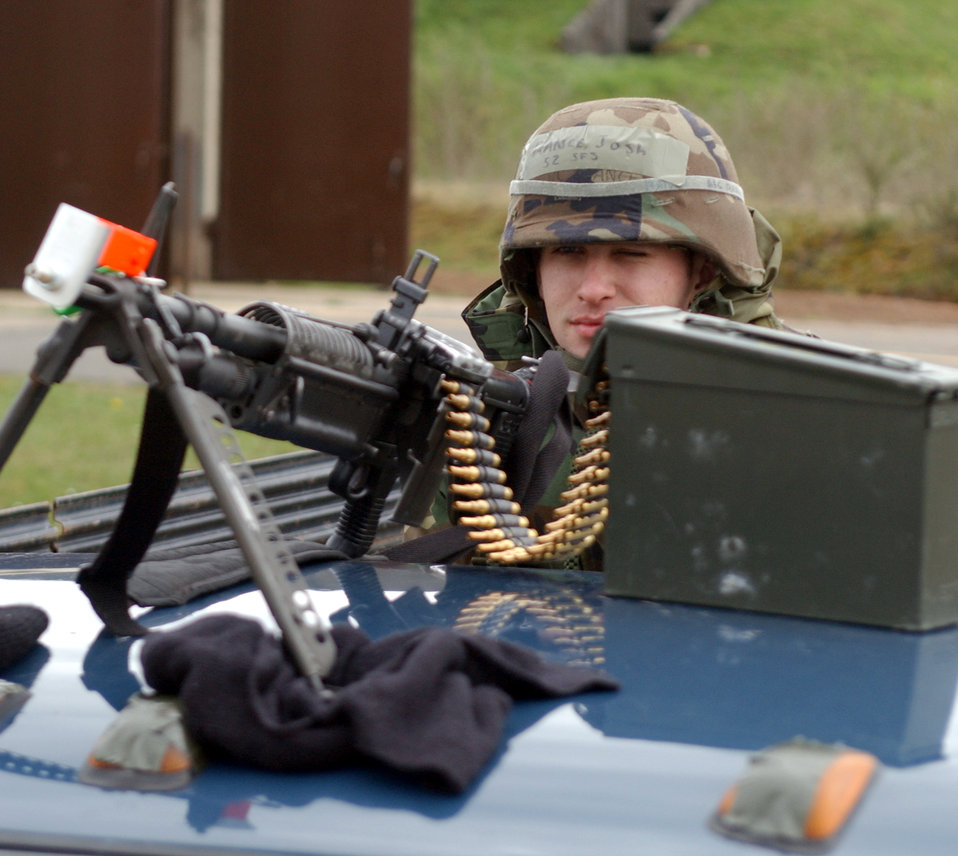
Watch out

SPANGDAHLEM AIR BASE, Germany -- Airman 1st Class Josh Rance mans an M-60 as he watches the entry control point and surrounding areas here April 20 during exercise Harley Saber. Airman Rance is a security forces Airman with the 52nd Security Forces Squadron.